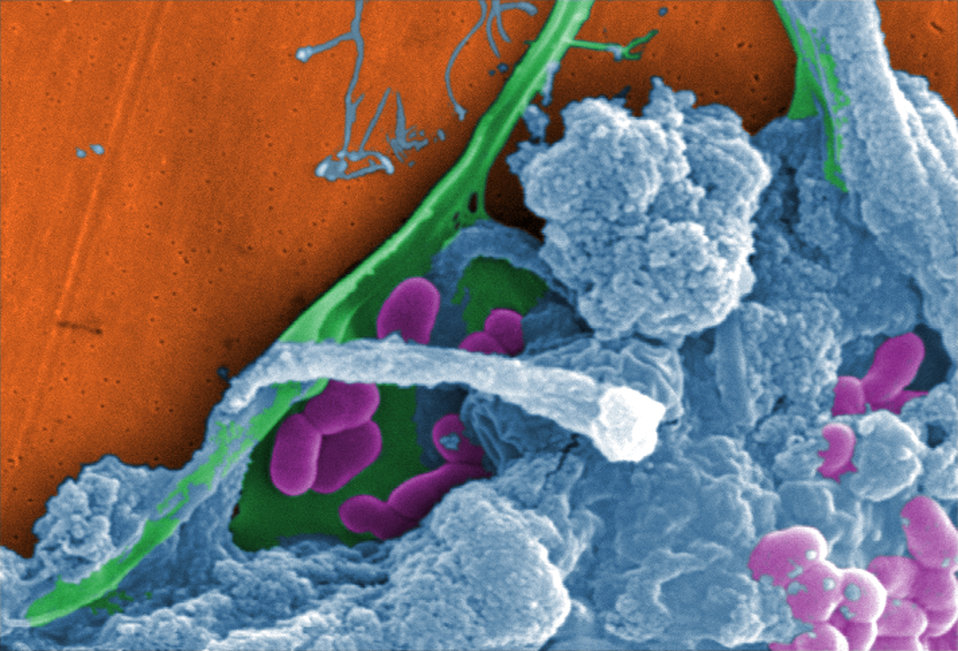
This digitally-colorized scanning electron micrograph (SEM) of an untreated water specimen extracted from a wild stream mainly used to control flooding during inclement weather, revealed the presence of unidentified organisms, which included bacteria, protozoa, and algae. In this particular view, a mass of gelatinous biofilm had enmeshed numbers of microorganisms, including amoebae and bacteria.